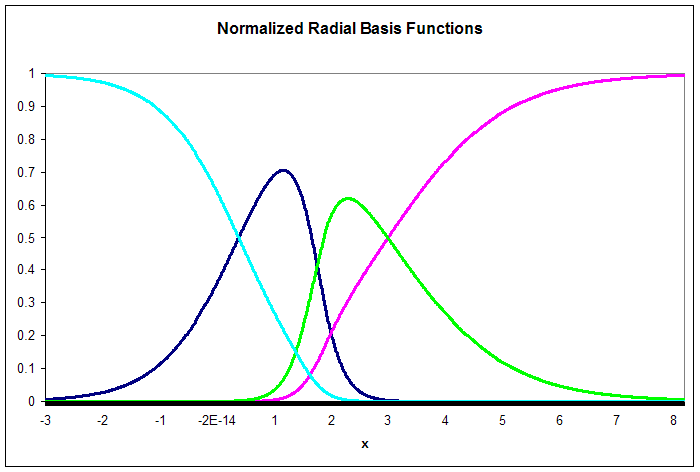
Radial bias function network - Figure 5: Four normalized radial basis functions in one input dimension. The fourth basis function has center at c4 = 0. Note that the first basis function (dark blue) has become localized.